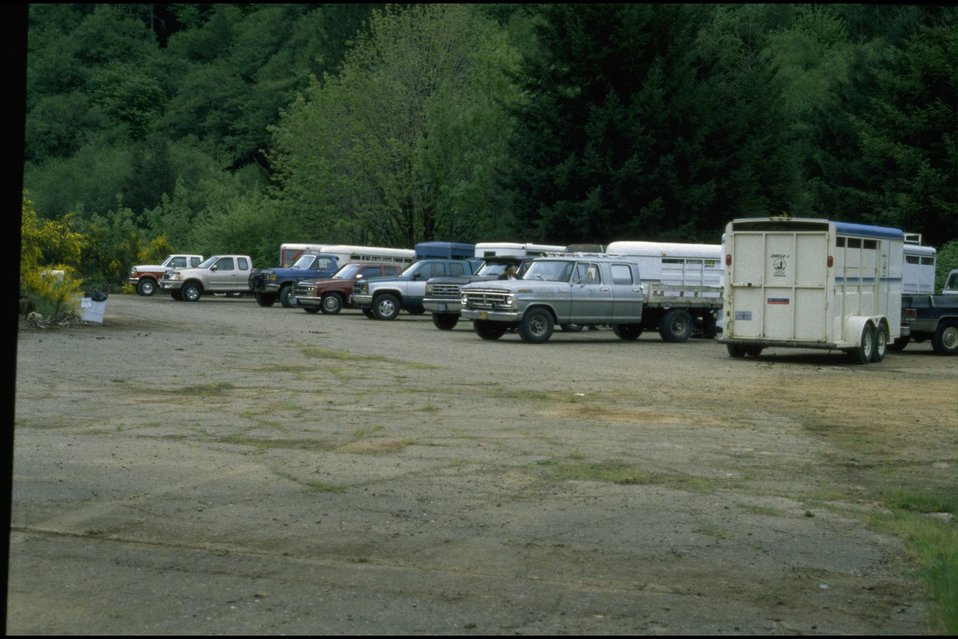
Horse Poker Ride.